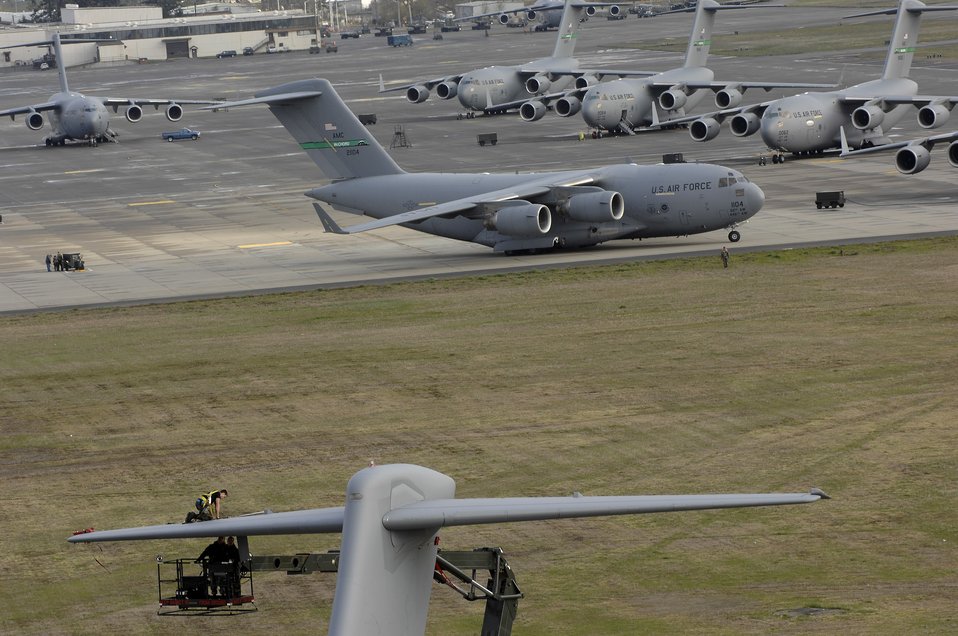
Maintainers keep C-17s flying

A departing C-17 Globemaster III at McChord Air Force Base, Wash., doesn't distract Airmen replacing an integrated flight control module March 28 on the tail of a C-17. The Airmen are assigned to the 62nd Aircraft Maintenance Squadron here.